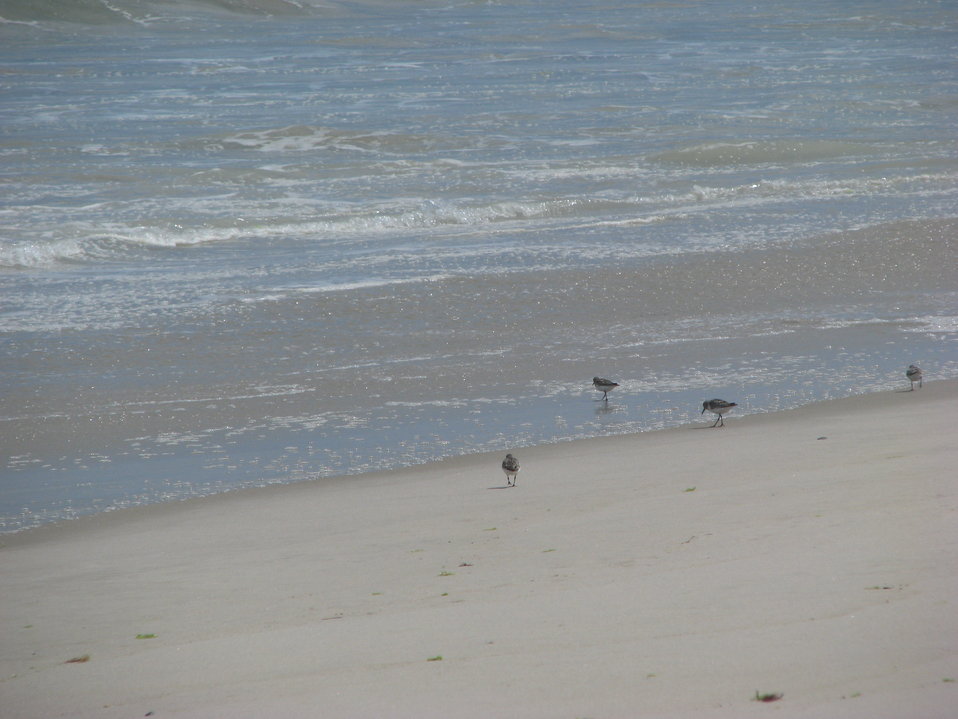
Sanderlings

Monomoy National Wildlife Refuge, MA.